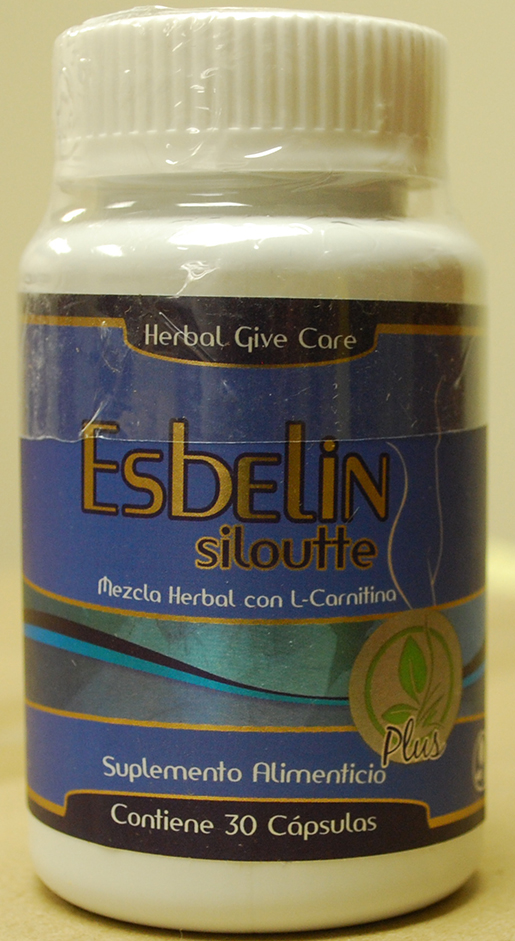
RECALLED – Dietary Supplement

July 19, 2013 – Product Recall – Herbal Give Care LLC Issues Voluntary Nationwide Recall of Esbelin Siloutte Te and Esbelin Siloutte Vitamin Supplement Due to Potential Health Risks.